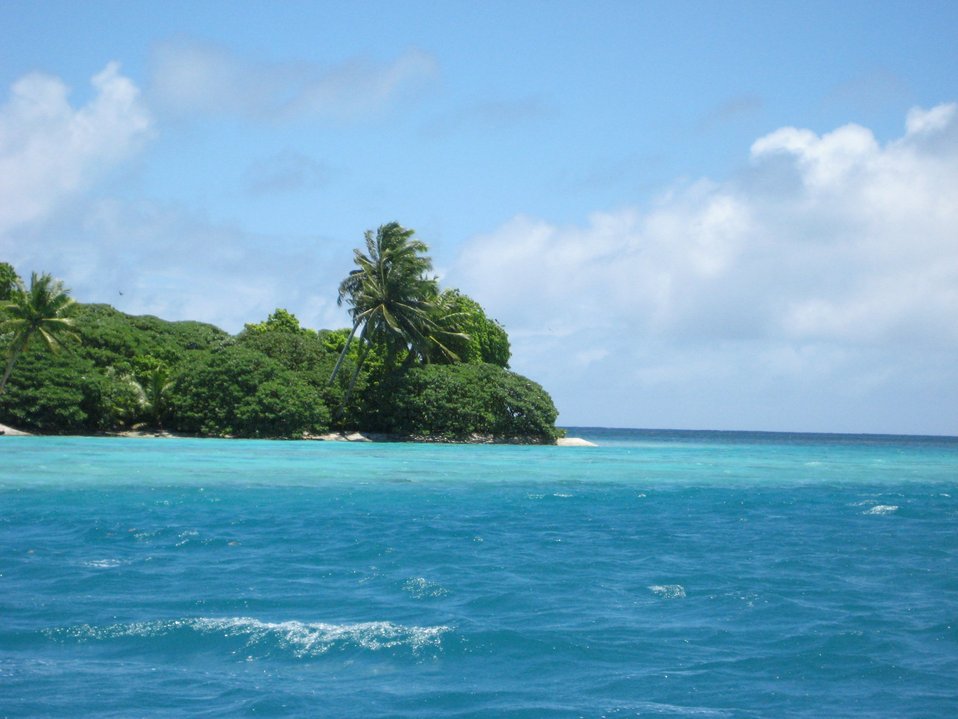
Vegetation including the ubiquitous palm trees of the tropical Pacific cover Palmyra Island and its associated offshore islets.